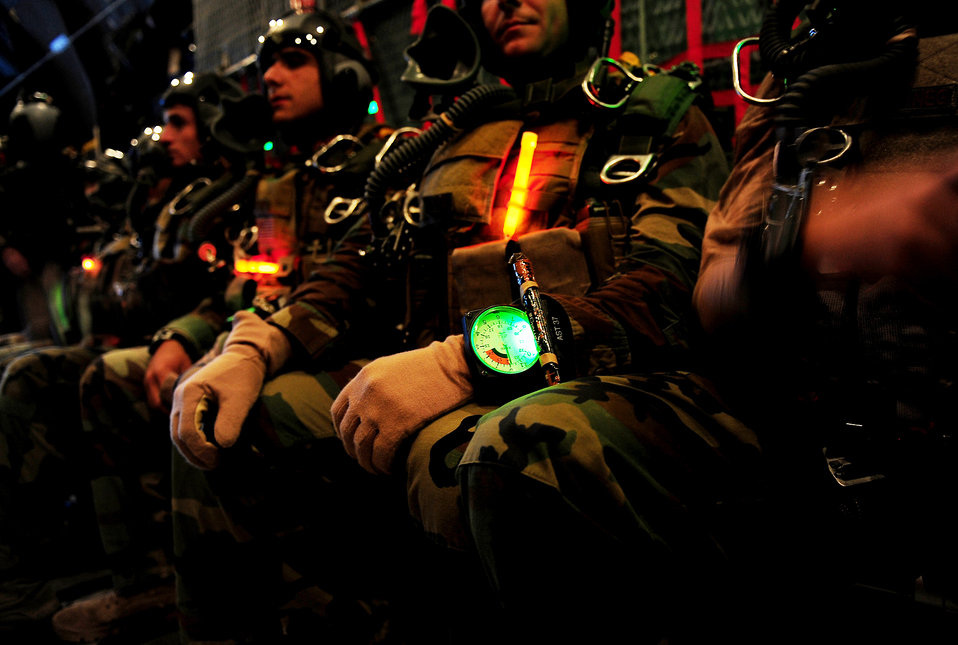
Special Tactics Airmen jump at night

U.S. Air Force Special Tactics Training Squadron members wait to jump on a high altitude, low opening or HALO, mission near Fort Walton Beach, Fla., March 16, 2010, during Exercise Emerald Warrior 2010. The 19-day joint training exercise provided participants with realistic urban-warfare training scenarios at multiple sites in Florida.